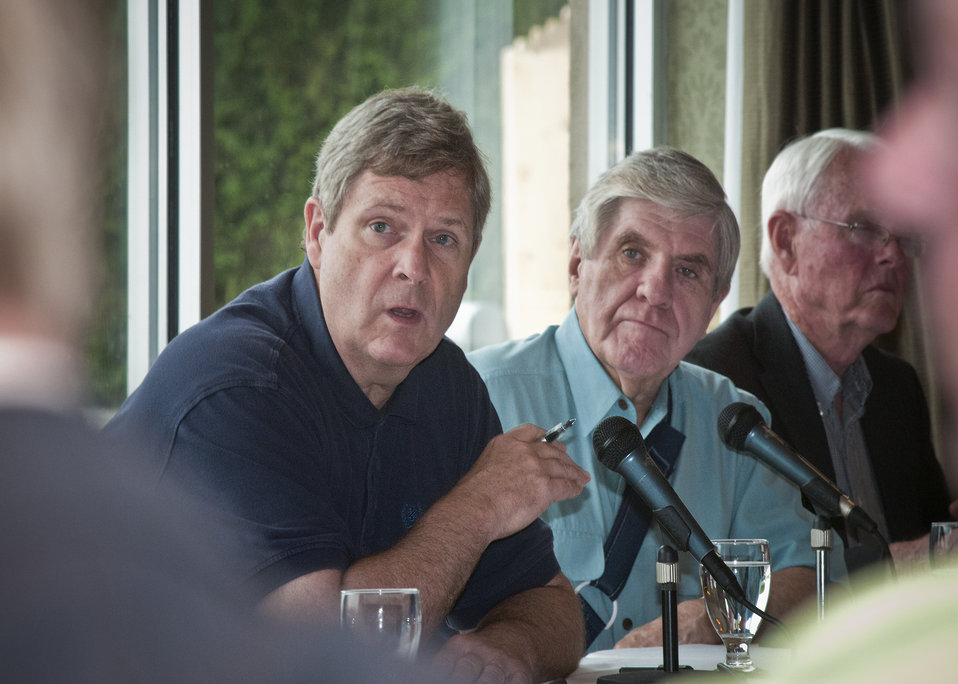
Agriculture Secretary Tom Vilsack (left) and Senator Ben Nelson (right), Nebraska, a member of the Senate Committee on Agriculture, Nutrition and Forestry held a town hall meeting at the Marina Inn in South Sioux City, Nebraska Friday, June 17, 2011, on the floodwaters along the Missouri River affecting Iowa and Nebraska. The goal of the meeting with the producers and community leaders is to get a firsthand look and provide information back to Washington to better deliver disaster programs quickly to effectively respond to this disaster. The meeting provided the information necessary for USDA agencies to implement programs to assist producers as they assess recovery efforts. USDA administers many programs to assist with recovery in rural areas reeling from natural disasters.